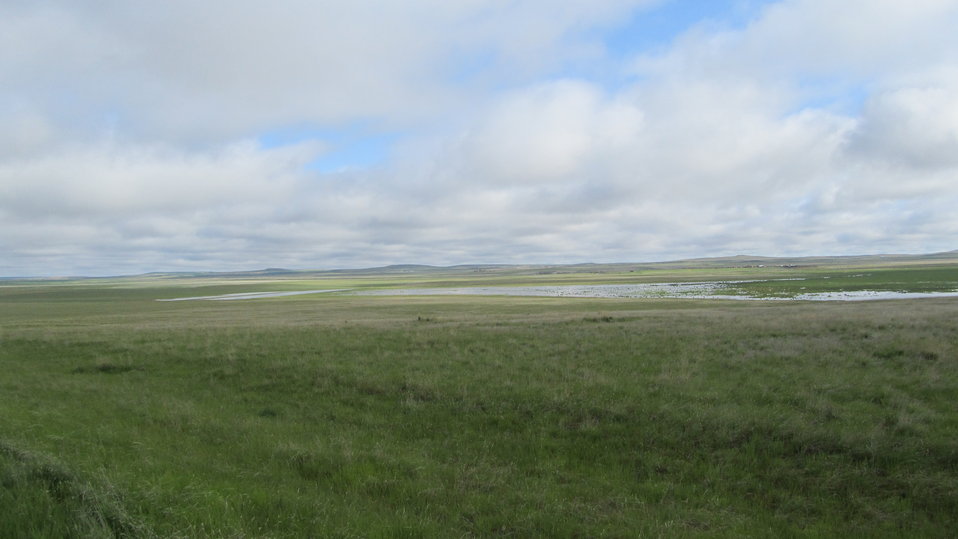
South Shore of Unit I

Benton Lake NWR is one of more than 520 national wildlife refuges administered by the U.S. Fish and Wildlife Service that were established to protect, enhance, and restore the Nation's wildlife heritage. Covering 12,383 acres (19 square miles), the Refuge is located on the western edge of the northern Great Plains, 50 miles east of the Rocky Mountains and 12 miles north of Great Falls, Montana. Despite its name, Benton Lake is actually a 5,000-acre shallow wetland created by the last continental glacier thousands of years ago.